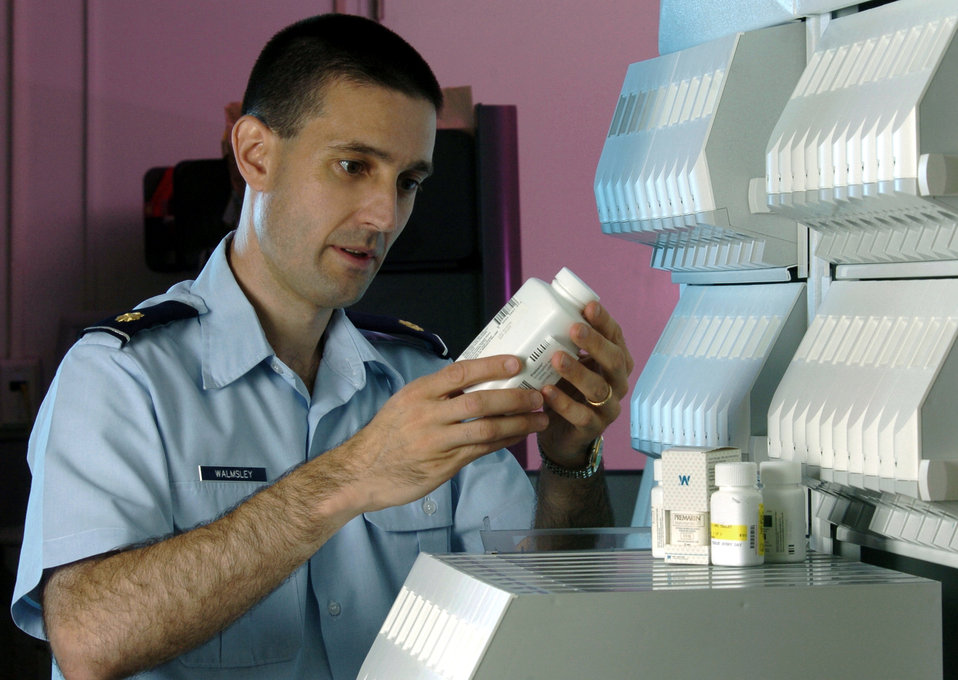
Yokota pharmacy ensures a mission-ready force

YOKOTA AIR BASE, Japan -- Maj. David Walmsley checks the expiration date on a medicine container at the hospital here. He is a pharmacist for the base's 374th Medical Group. The pharmacy staff handled more than 84,000 prescriptions last year.